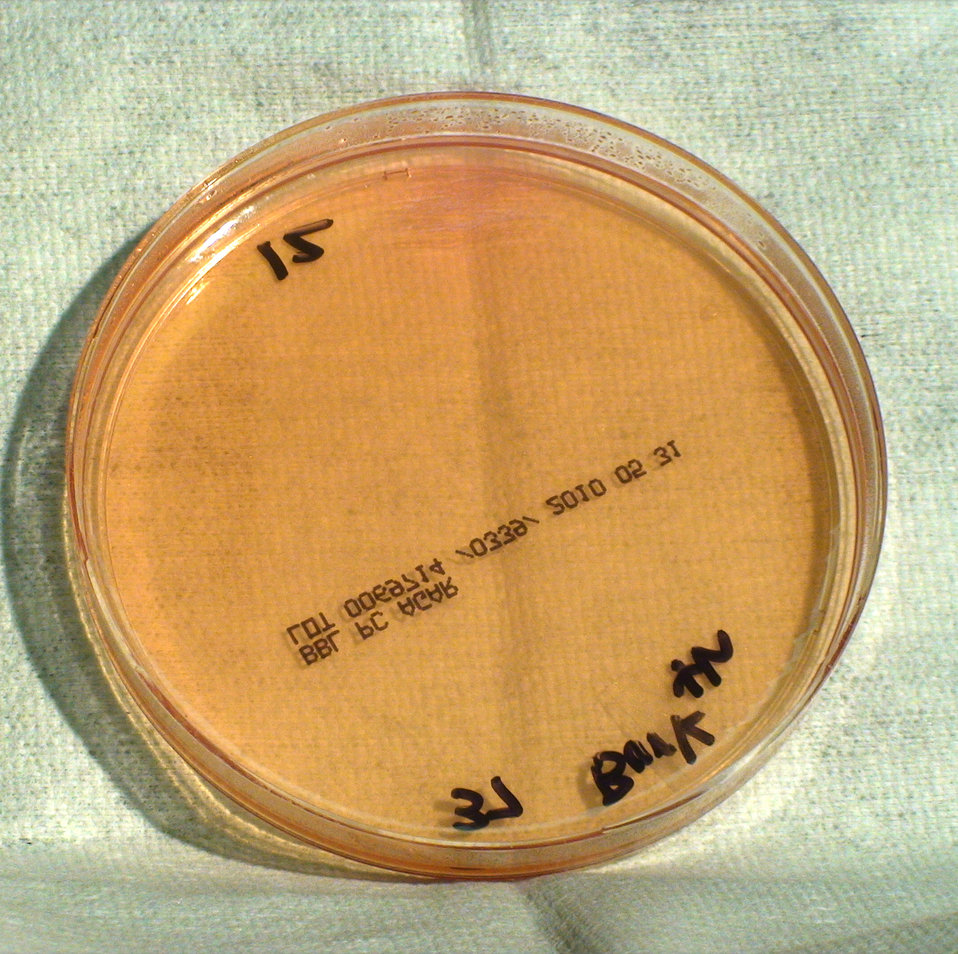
This photograph depicts the colonial morphology displayed by Gram-negative Burkholderia thailandensis bacteria, which was grown on a medium of Pseudomonas cepacia (PC) agar, for a 24 hour time period, at a temperature of 37�C. See PHIL 12422 for a closer view of these bacterial colonies. Note that PHIL 12407 depicts a view of B. thailandensis colonies grown on this same medium, and at the same temperature, but for twice the time period (48hrs), and PHIL 12416 depicts this bacterial specie, grown on PC agar, at a greater temperature (42�C), and at twice the time period (48hrs) . Finally, see both PHIL 12429 and 12430, which reveal colonial growth on PC agar, at a greater temperature (42�C), but for the same amount of time (24hrs).